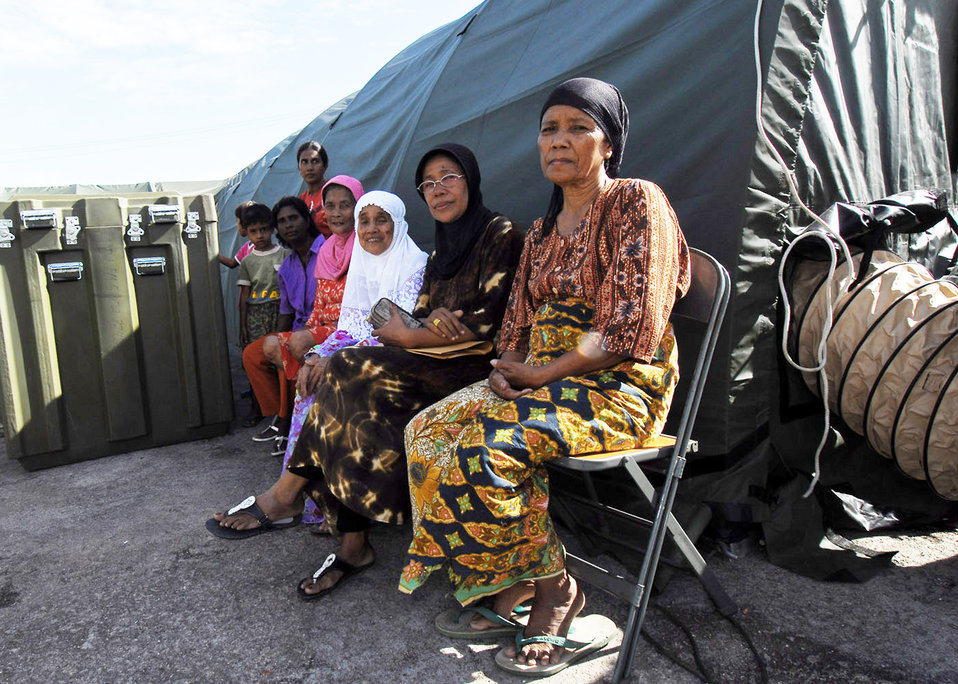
HARRT arrives in Indonesia

Patients wait to be examined by members of an Air Force humanitarian assistance rapid response team Oct. 7, 2009, in Padang, Indonesia. The HARRT has set up a mobile hospital to provide medical care to those injured by the recent earthquakes in Indonesia.